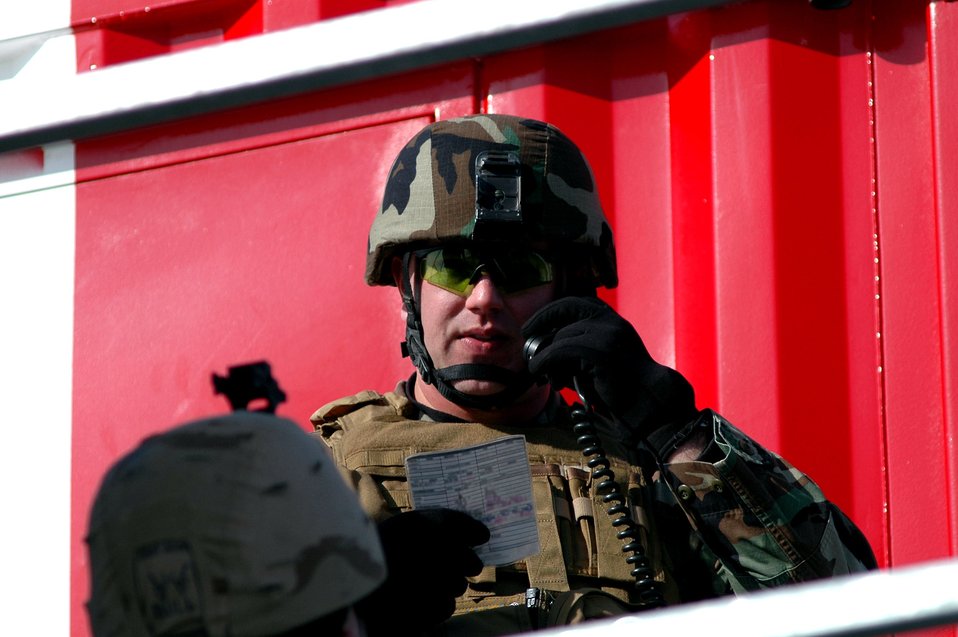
Red Flag-Alaska wraps up

Tech. Sgt. Adam Vizi calls out coordinates for an air strike in support of